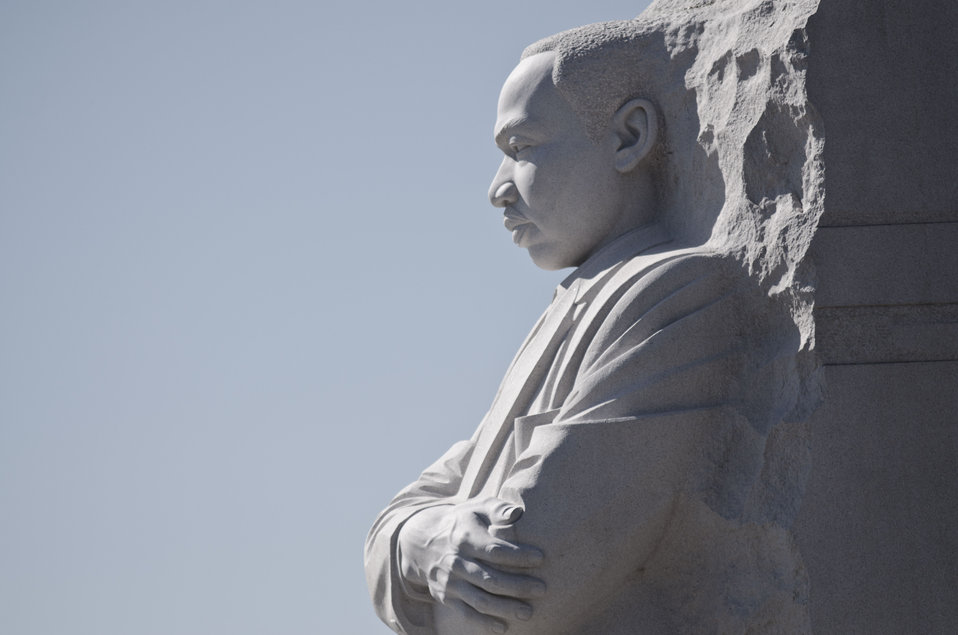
Martin Luther King, Jr. Memorial in Washington, DC, on Saturday, October 8, 2011.